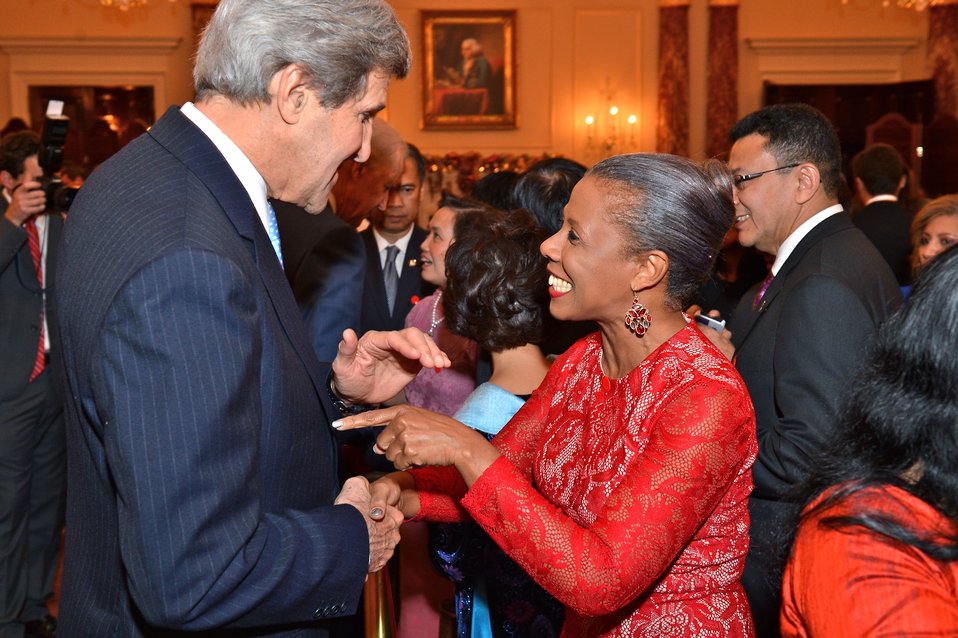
Secretary Kerry Chats With Guests

U.S. Secretary of State John Kerry chats with guests at the Holiday Reception for the Diplomatic Corps and their spouses at the U.S. Department of State in Washington, D.C., on December 9, 2013.